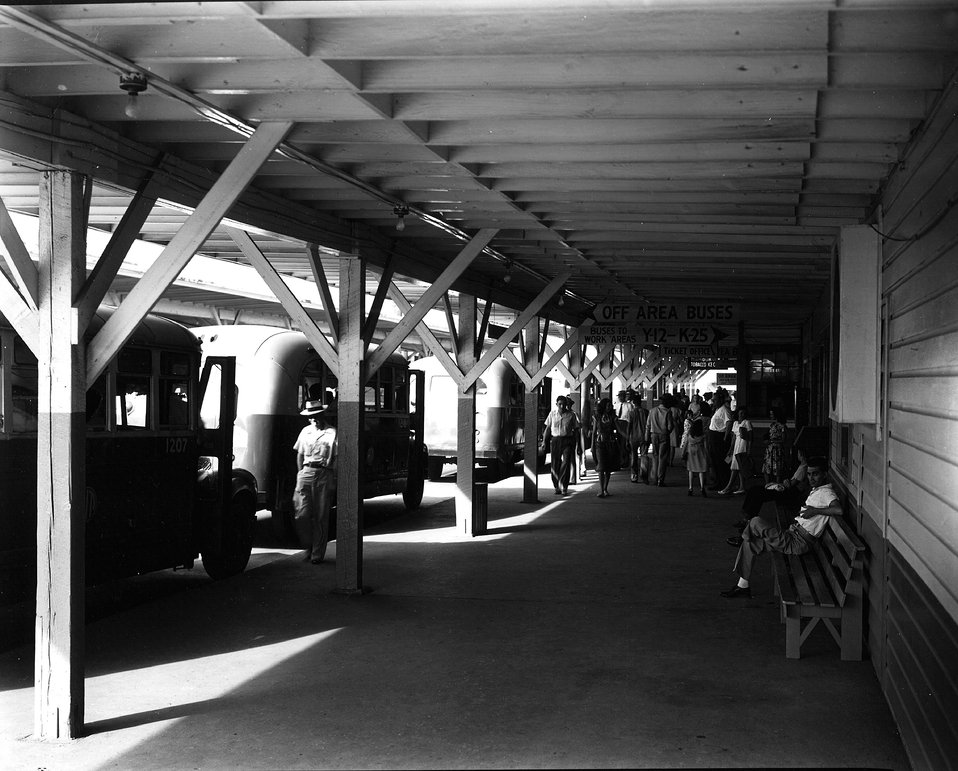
Bus terminal town site. c. 1948